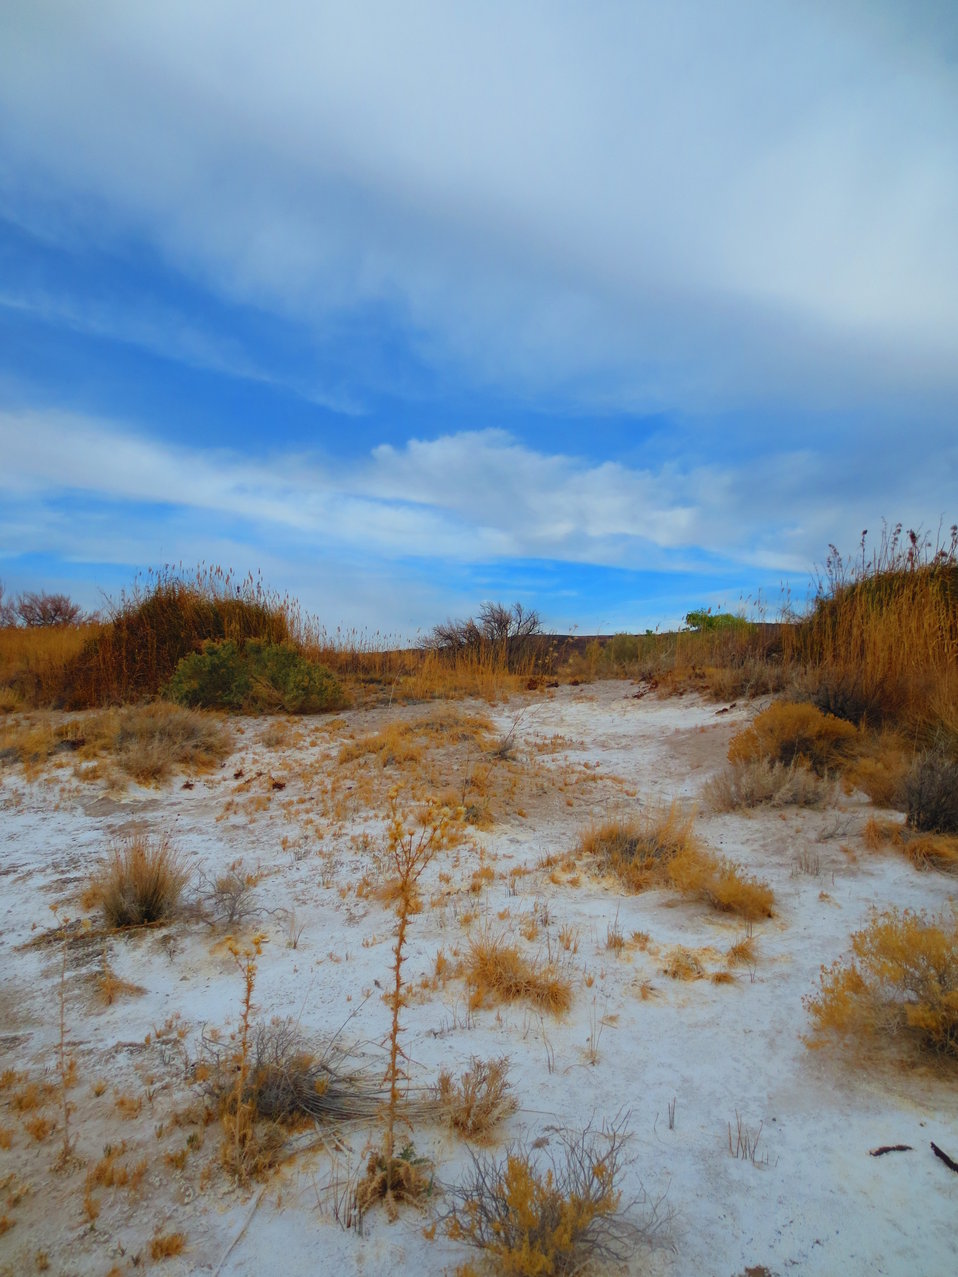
Salty Ground

The ground water discharged from springs and seeps at Ash Meadows NWR is exposed to extensive evaporation. As a result, dissolved salts concentrate on the grounds surface and at shallow depths within the soil.